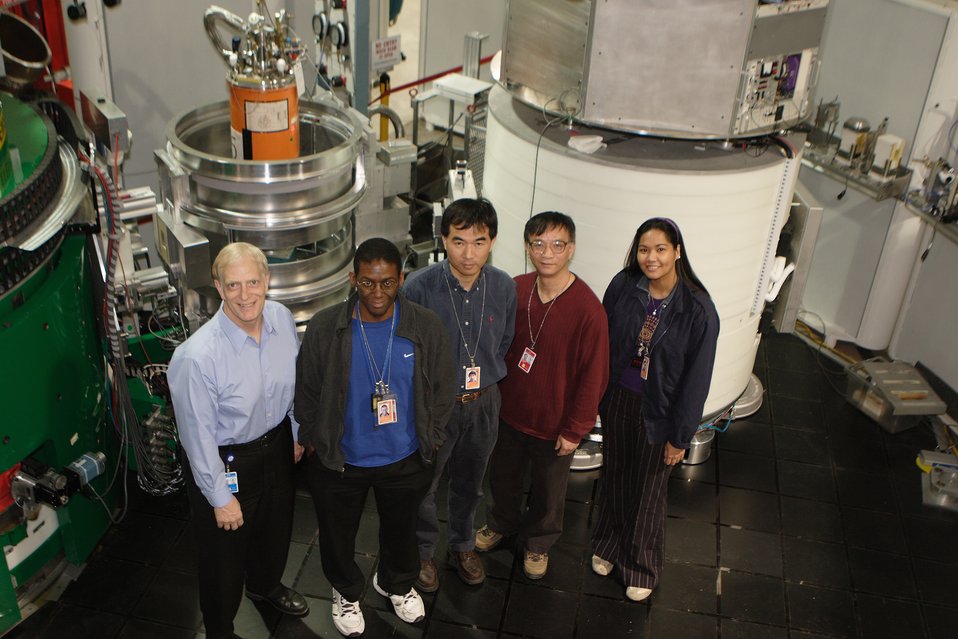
Jeffrey Lynn team

Part of the team that determined the magnetic and crystal structure of the new iron-based superconductor with the NIST Center for Neutron Research instrument they used for the experiment. Pictured from left are Jeffrey Lynn (NIST), William Ratcliff II (NIST), Pengcheng Dai (University of Tennesee Knoxville/Oak Ridge National Laboratory), Qing Huang (NIST) and Clarina de la Cruz (University of Tennessee Knoxville).